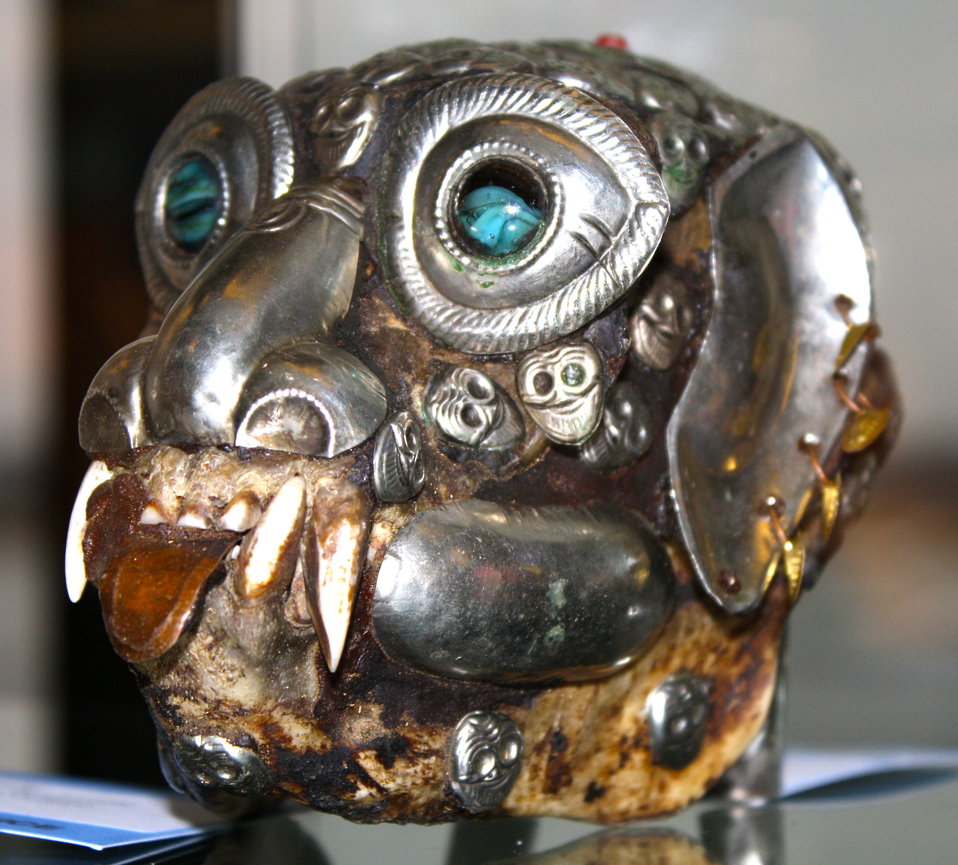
Decorated Primate Skull